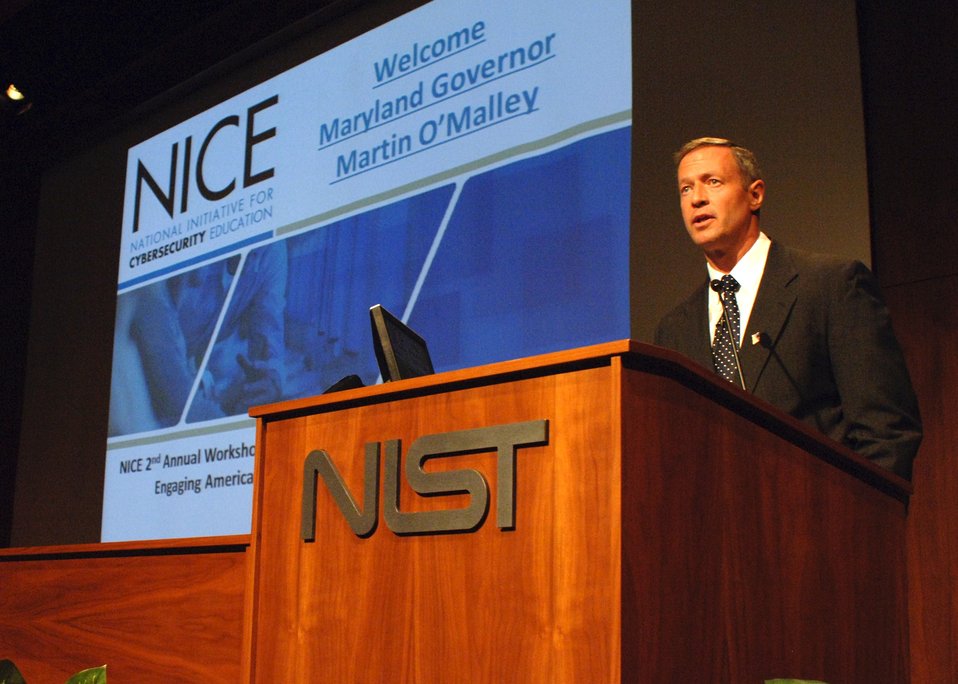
Maryland Governor Martin O'Malley spoke at NIST this afternoon as part of a workshop hosted by the National Initiative for Cybersecurity Education (NICE), a national campaign coordinated by NIST.

Calling cybersecurity an 'urgent priority,' O'Malley emphasized the need for government and the private sector to work together to 'invest in the skills of our people' and create new jobs in the cyber field. In part, he said job creation will depend on how quickly we move good ideas from labs to the commerical sector. He also noted that 'A modern economy requires modern investment,' and 'the single most important investment is the investment in public education.'